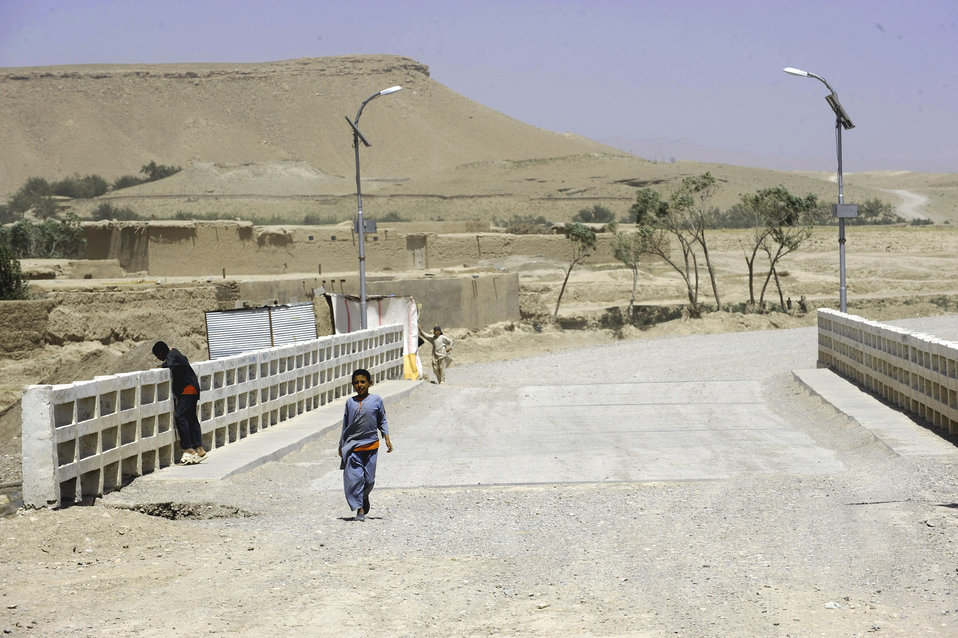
PRT Zabul team completes projects for progress

Afghan children cross the Tarnak Bridge, which is being repaired by Provincial Reconstruction Team Zabul and Zabul Province government officials May 27, 2010, in Qalat City, Afghanistan.